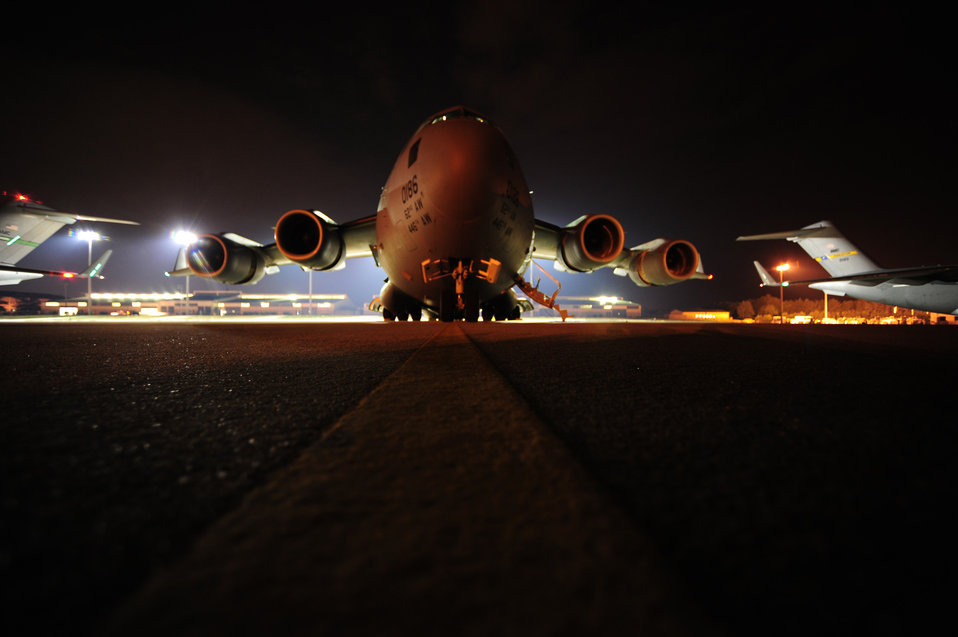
The Air Force never sleeps

A C-17 Globemaster III sits on the flightline at Pope Air Force Base, N.C., June 26, 2011, during the Joint Operations Access Exercise. JOAX is a two-week exercise to prepare Air Force and Army troops to respond to worldwide crises and contingences.